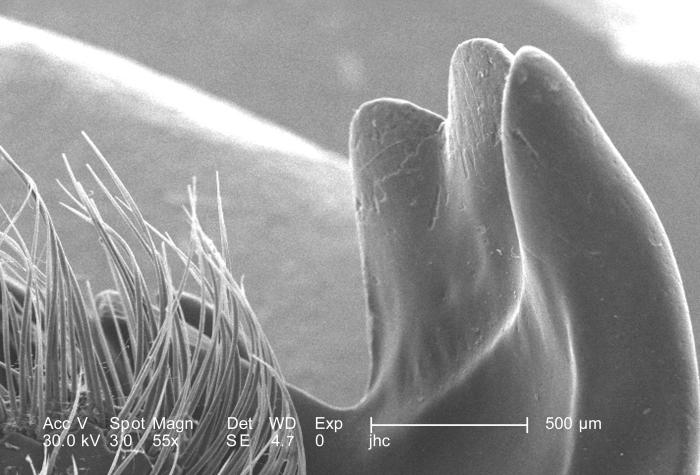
Under a low magnification of 55X this scanning electron micrograph (SEM) depicted some of the exoskeletal morphologic characteristics displayed on the head region of an unidentified beetle found deceased in the suburbs of Decatur, Georgia. In this particular view, the mandibular protuberances were quite evident.